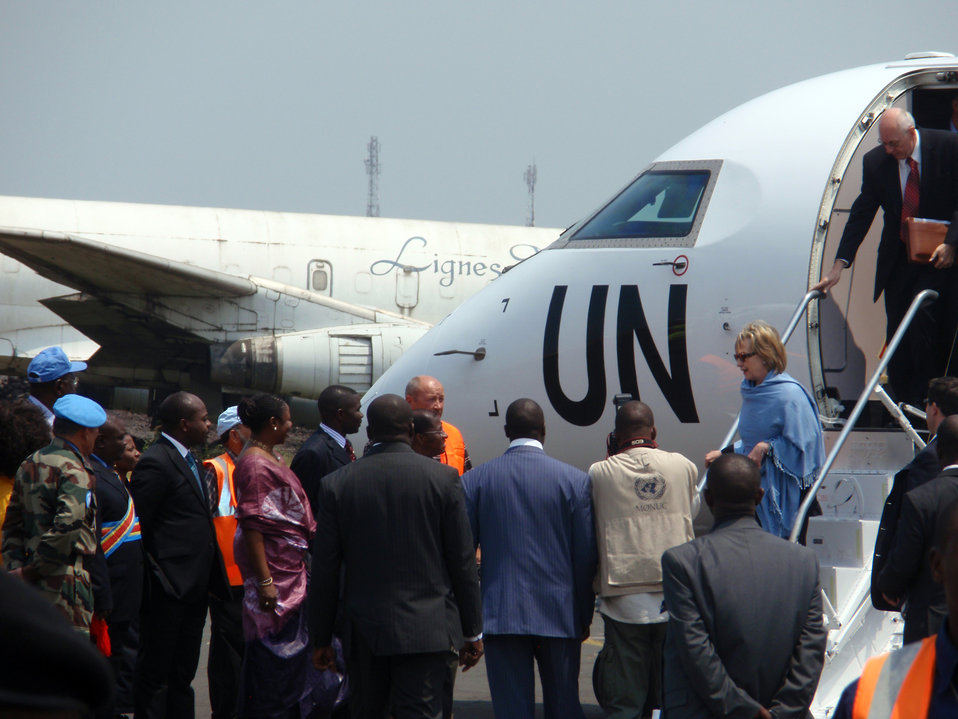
Behind the Scenes: Secretary Clinton Arrives in Goma

U.S. Secretary of State Hillary Rodham Clinton arrives in Goma, Democratic Republic of Congo August 11, 2009.